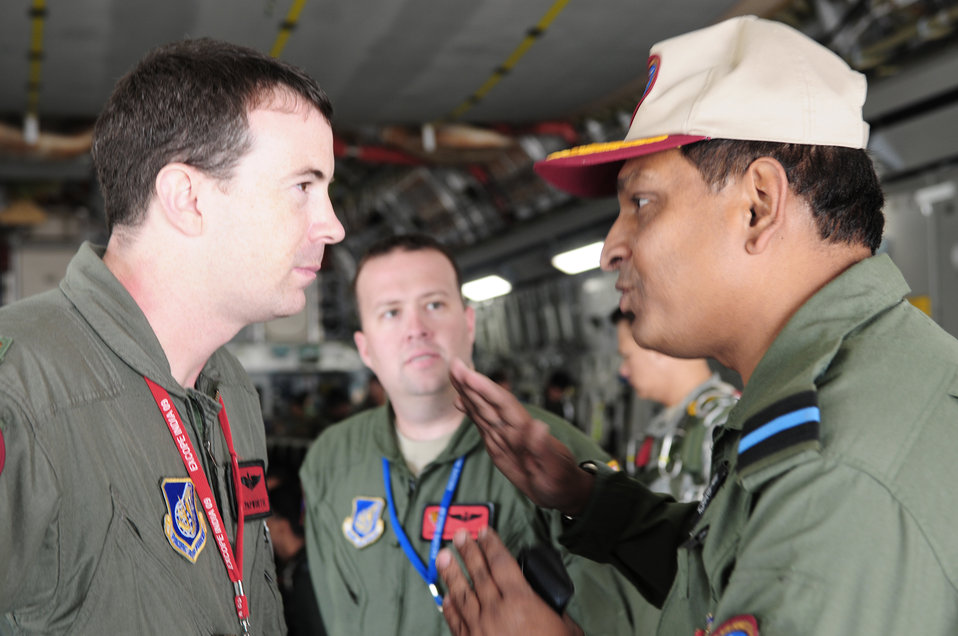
Cope India dubbed a success

Commodore Shouvik Roy asks questions of Maj. Sean Papworth,during preflight discussion of the mission Oct. 22, 2009. Commodore Roy is the commanding officer of Air Force Station Arga and was an observer during one of the last sorties for Cope India. Major Papworth is from the 535th Airlift Squadron at Hickam Air Force Base, Hawaii. Cope India is a United States and India airlift exercise that provides training for humanitarian assistance and disaster relief operations.